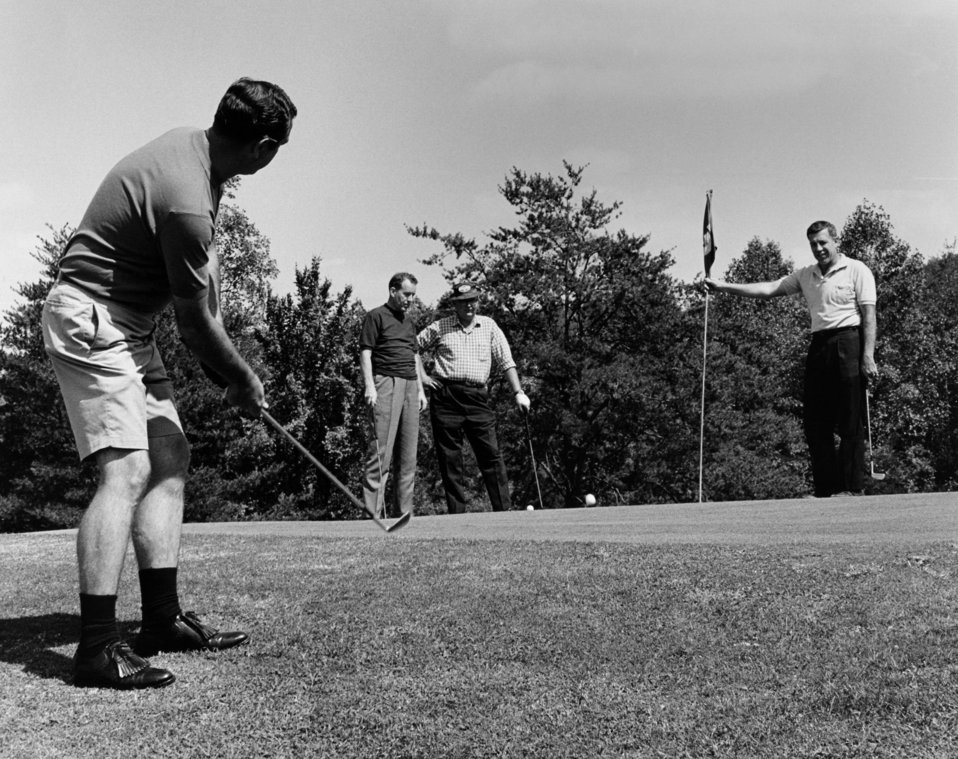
Golf Course Oak Ridge

68-460-6 DOE photo Ed Westcott 9-16-1968 Oak Ridge Tennessee